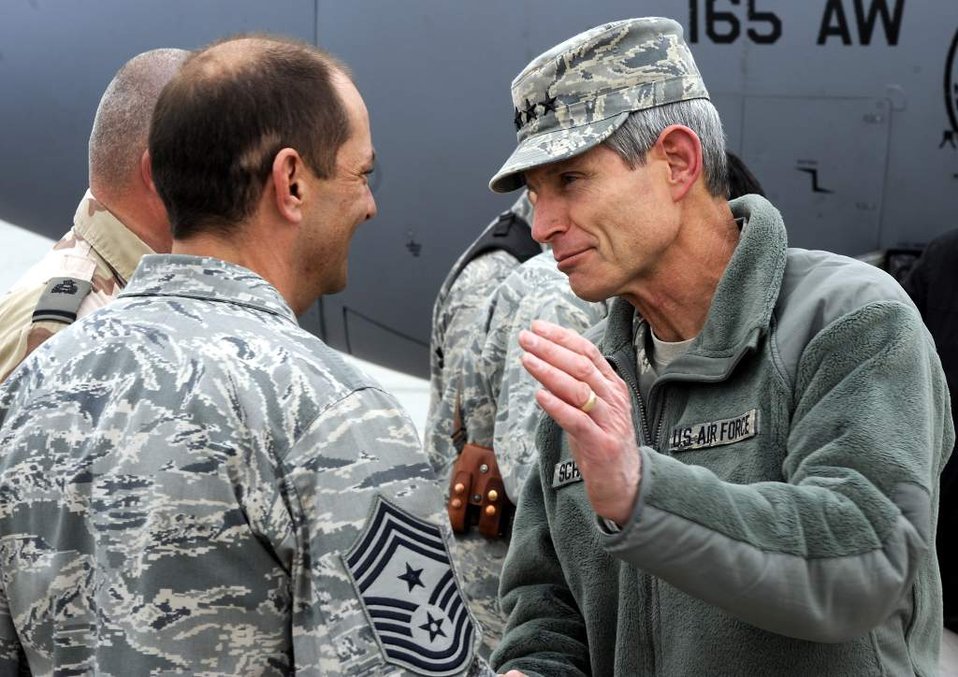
CSAF visits AFCENT bases

Air Force Chief of Staff Gen. Norton Schwartz greets Chief Master Sgt. Antonio Hickey Jan. 19, 2011, at Kandahar Airfield, Afghanistan. During an